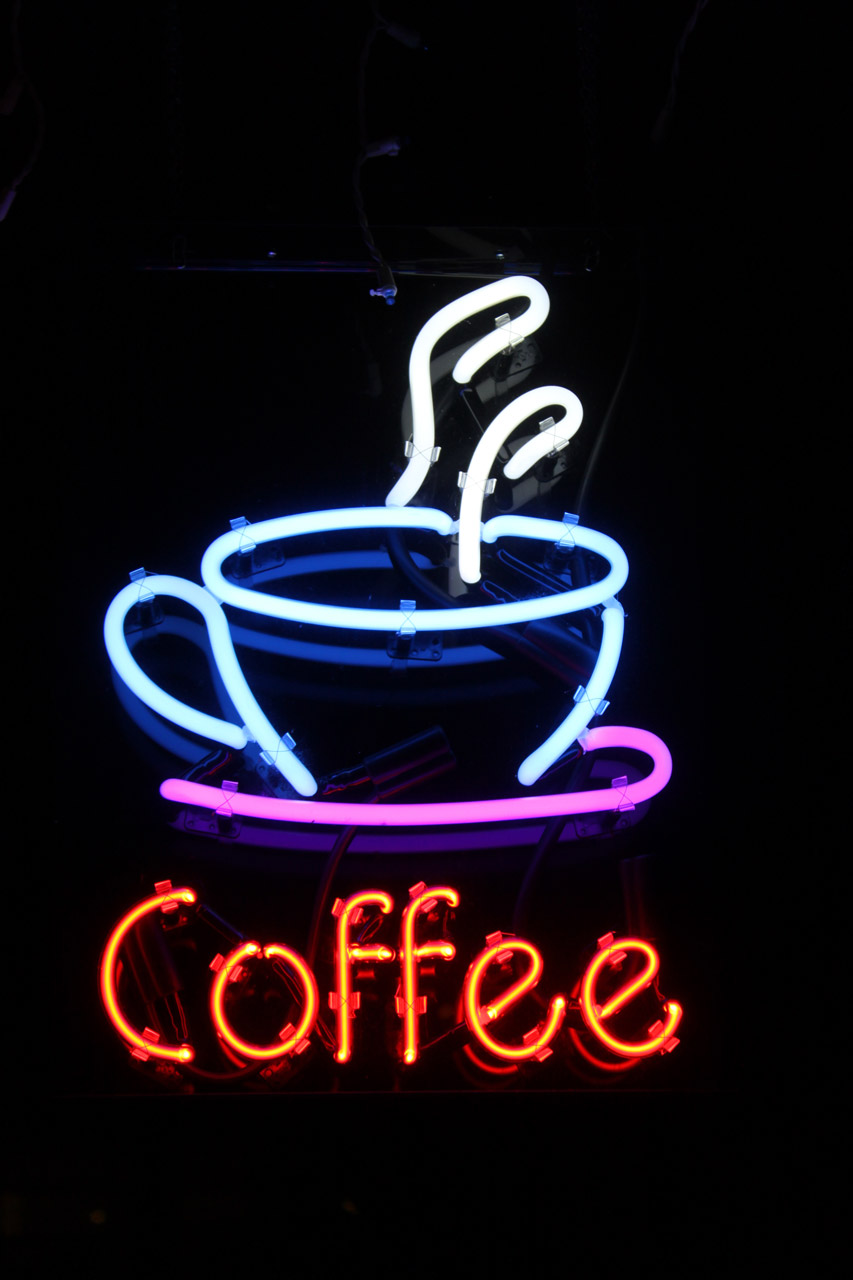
Coffee

Neon coffee sign in the old part of summerville, sc.